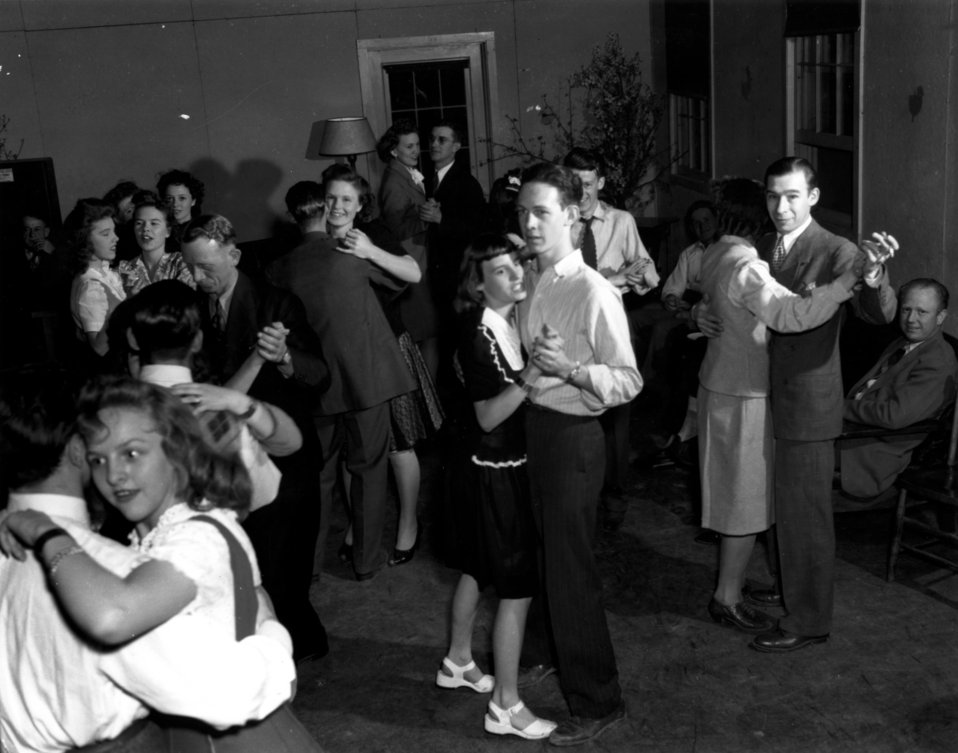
Recreation at Oak Ridge